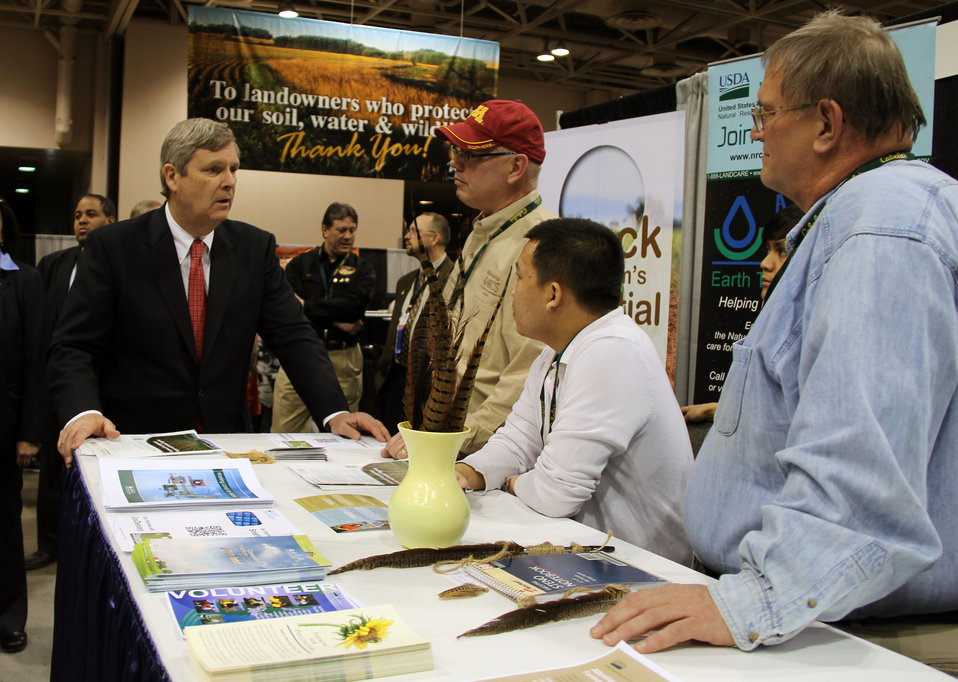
Agriculture Secretary Tom Vilsack visit a U.S. Department of Agriculture (USDA) booth at the 30th Annual National Pheasant Fest in Minneapolis, Minn on Feb. 16, 2013.